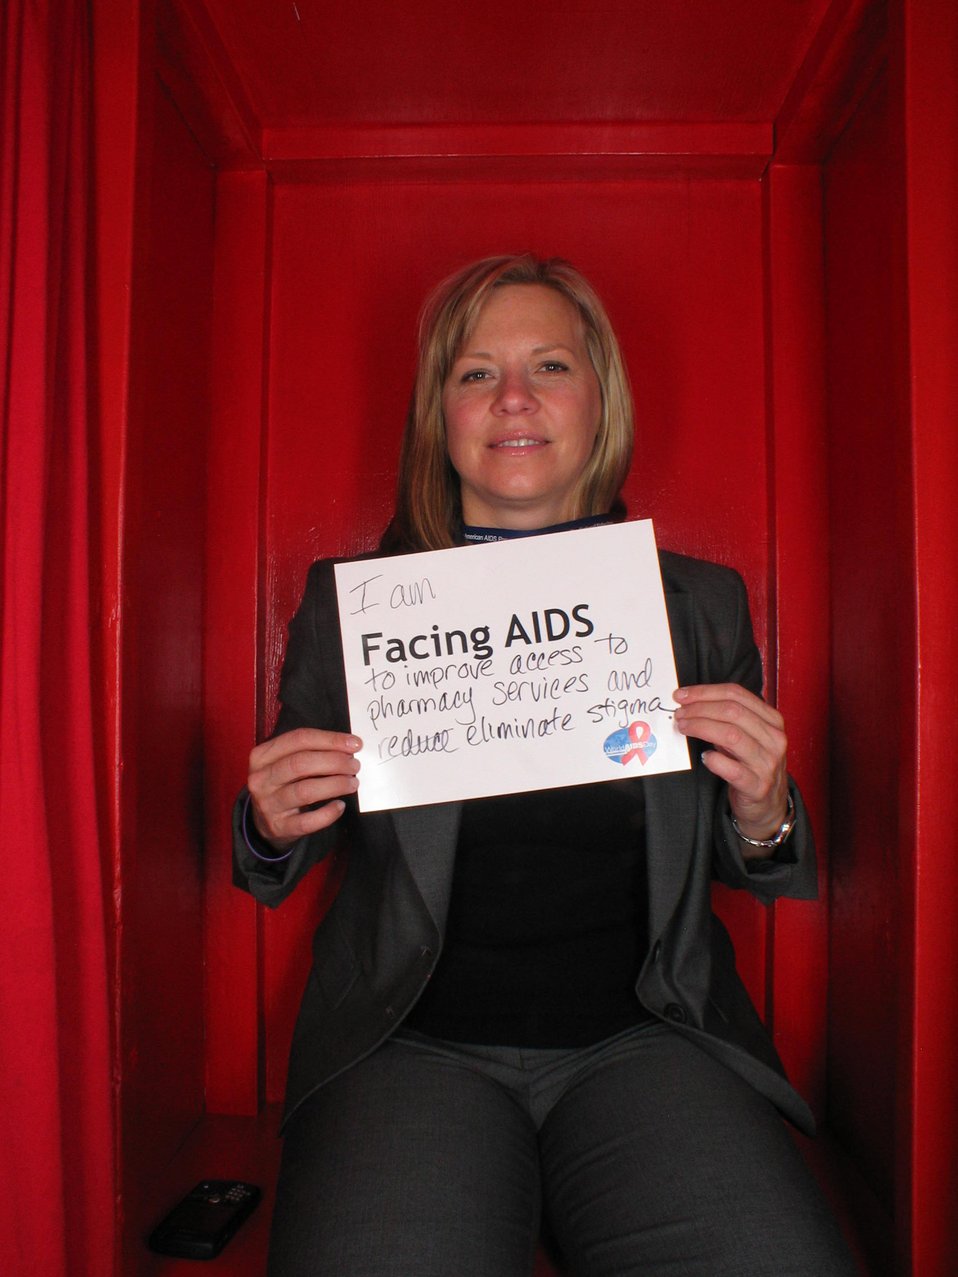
I am Facing AIDS to improve access to pharmacy services and reduce eliminate stigma.